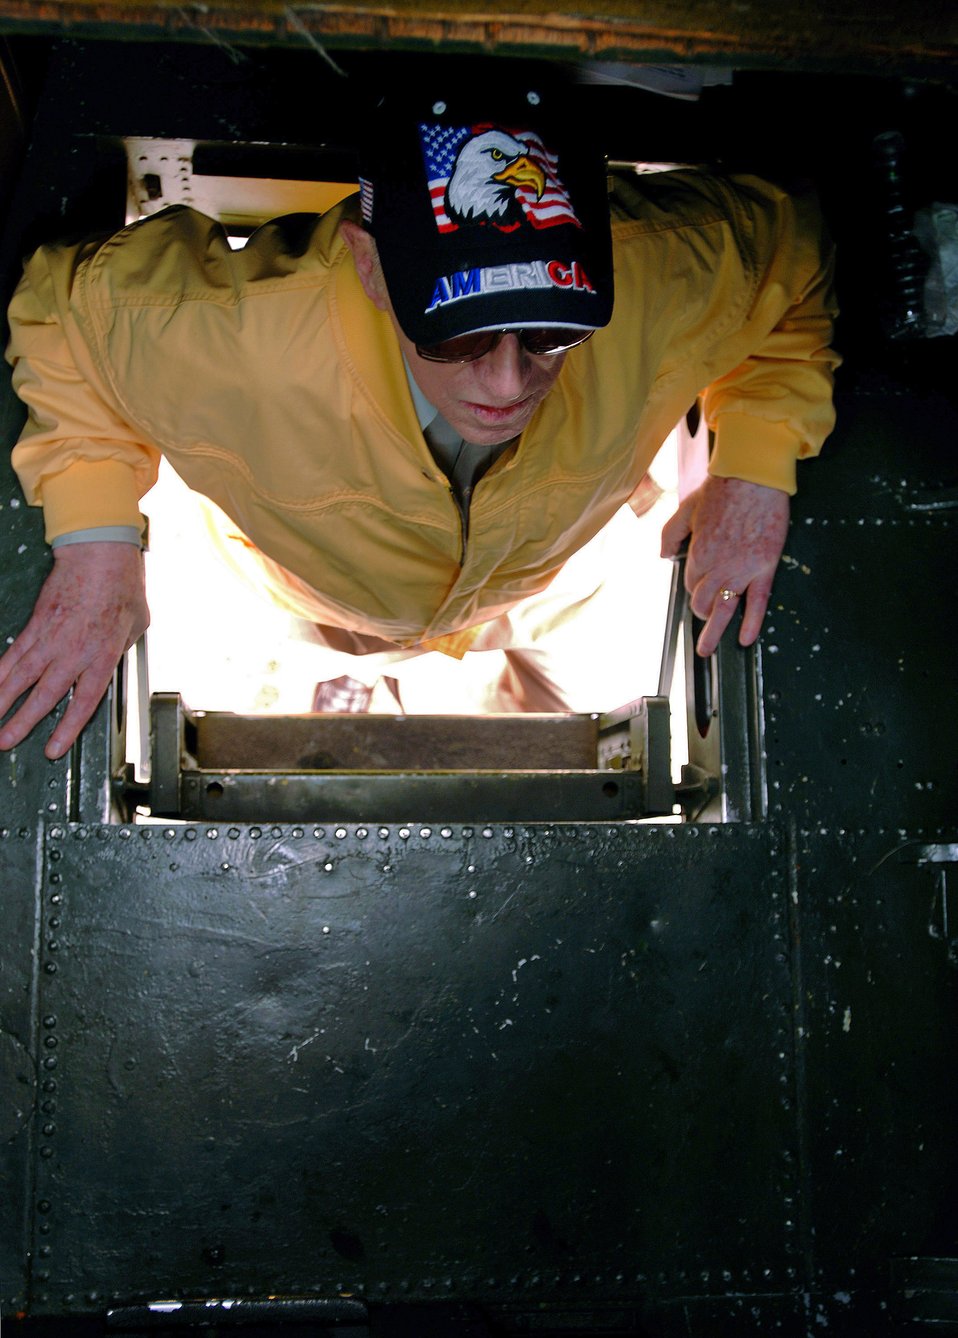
Army Air Corps veteran talks about war experience at air show

World War II veteran Robert McNally climbs aboard a B-25 Mitchell Aug. 19 at Pease Air National Guard Base at Portsmouth, N.H. The B-25 called the